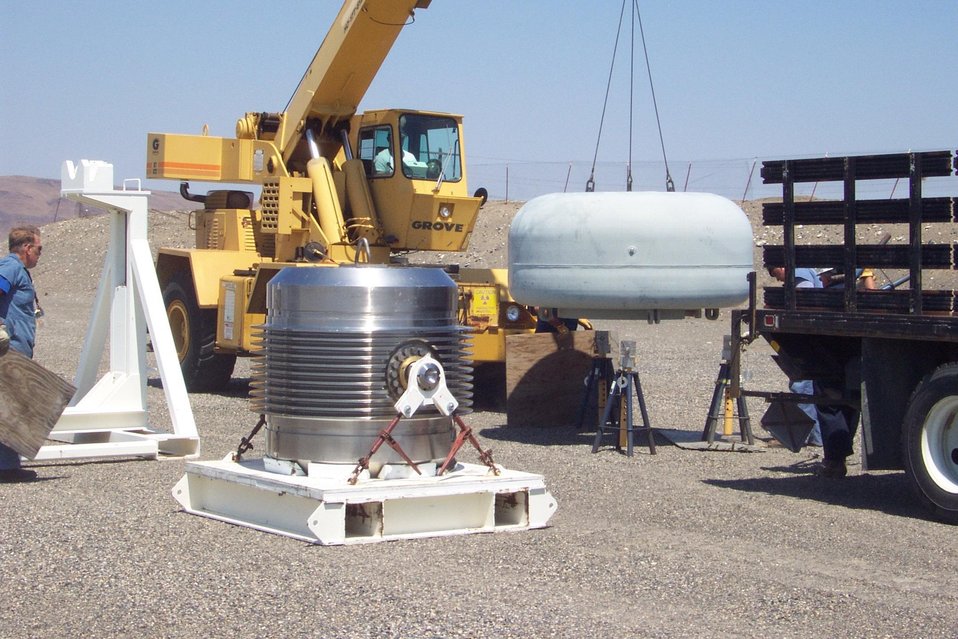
THE BENEFICIAL USES SHIPPING SYSTEM CASK AT THE WASTE ENCAPSULATION STORAGE FACILITY AT HANFORD.

THE WESF BENEFICIAL USES SHIPPING SYSTEM CASK IS RE-ASSEMBLED IN PREPARATION FOR LONG TERM STORAGE. THIS NUCLEAR REGULATORY COMMISSION LICENSED CASK IS USED TO SHIP WESF CAPSULES ACROSS THE COUNTRY. IT IS CONSTRUCTED OF STAINLESS STEEL, WEIGHS APPROXIMATELY 12 TONS AND CAN ACCOMMODATE UP TO 16 CAPSULES.